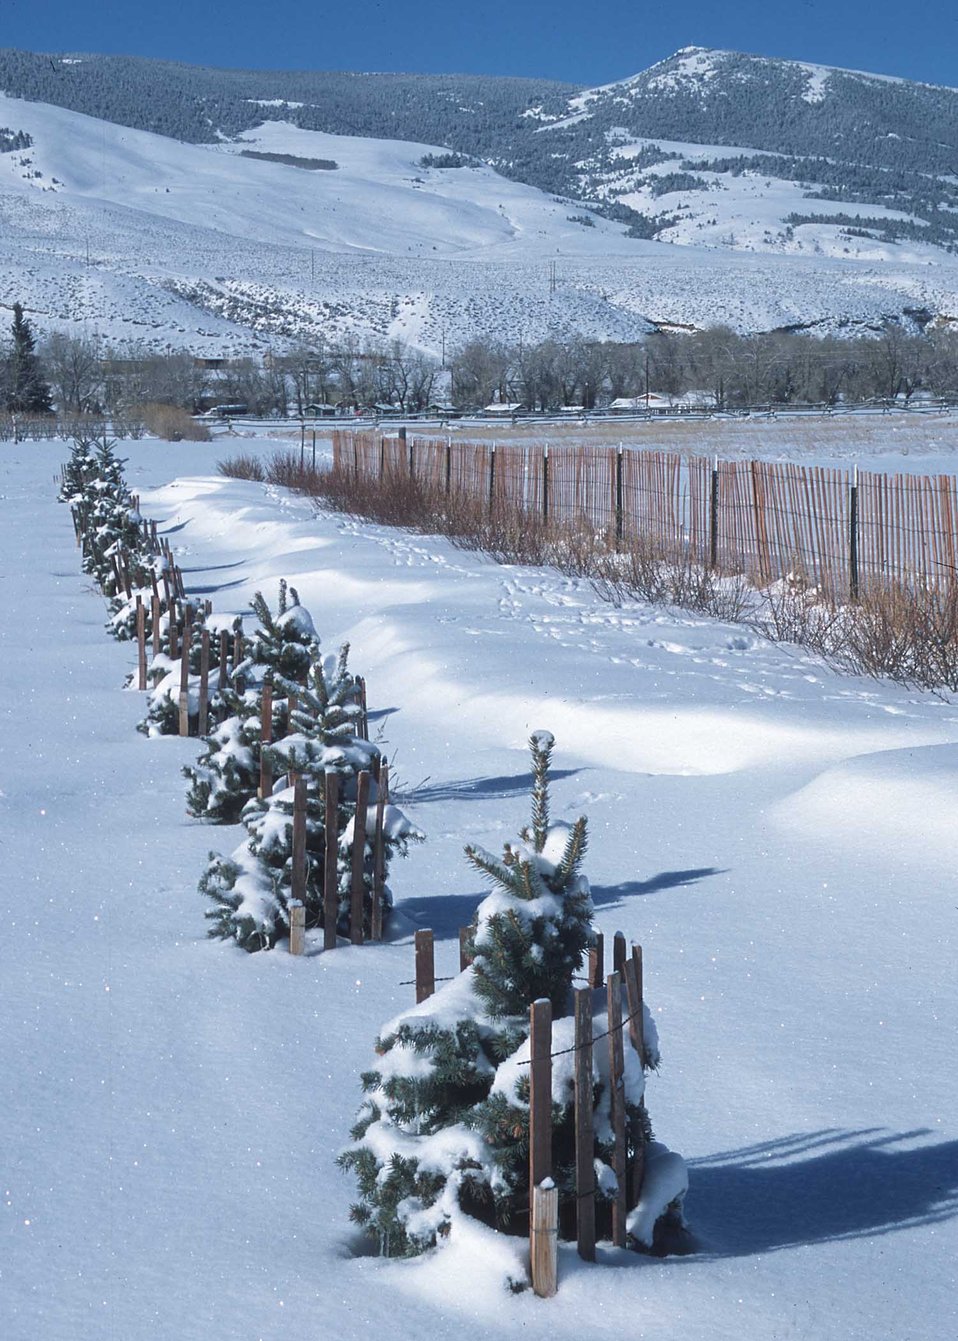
Three year old windbreak and snow fence catching snow. Dubois, Wyoming.